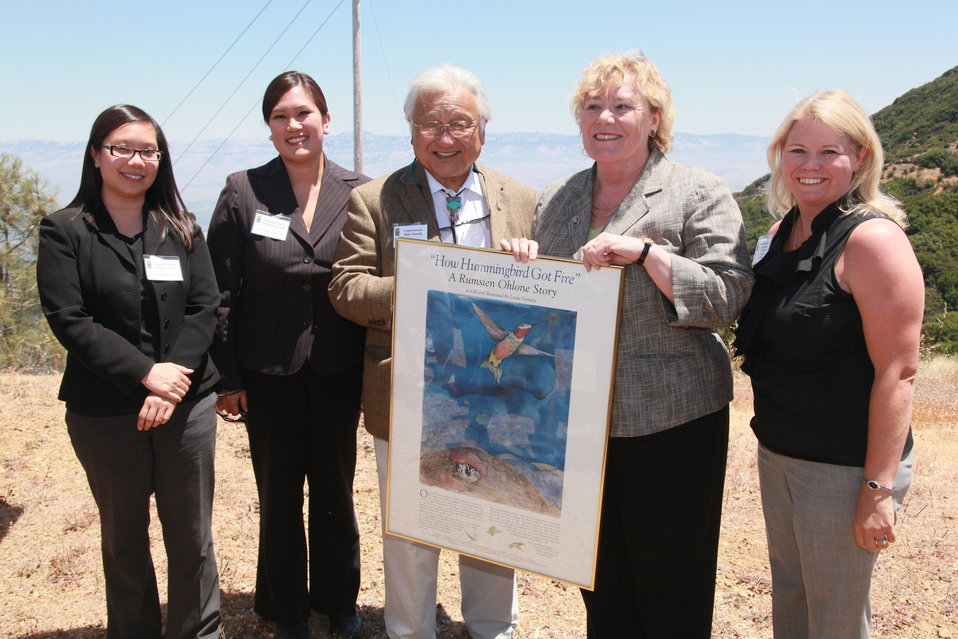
SACRAMENTO,Calif. (July 9,2010)-- Dignitaries celebrates the groundbreaking for the civil works project atop Mount Umunhum.